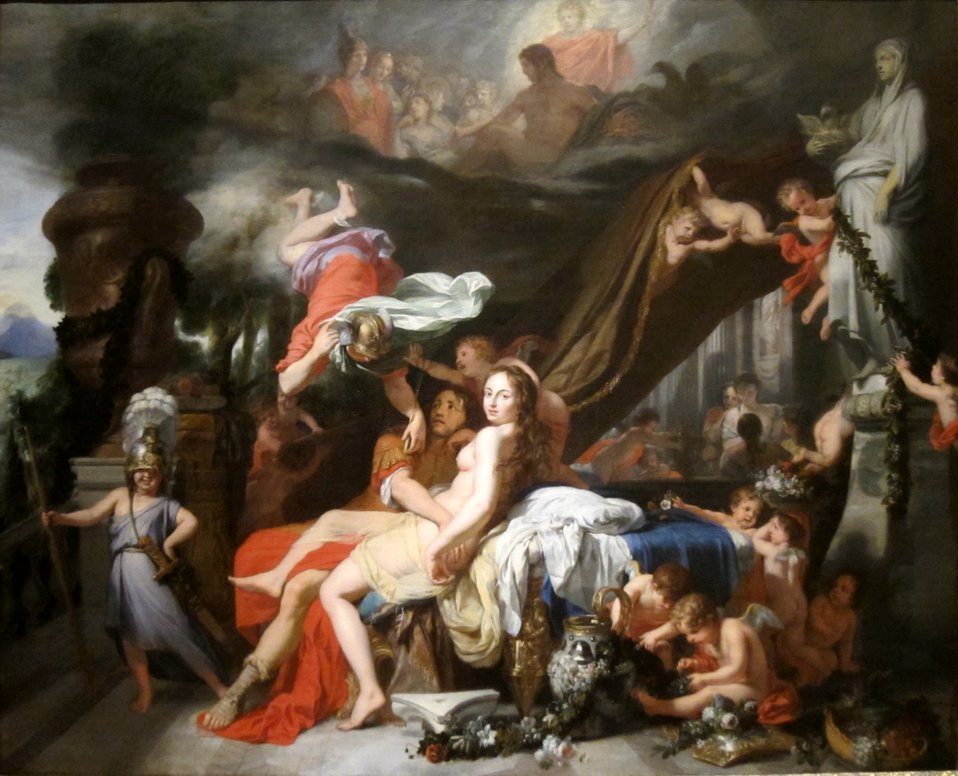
'Hermes Ordering Calypso to Release Odysseus' by Gerard de Lairesse, c. 1670